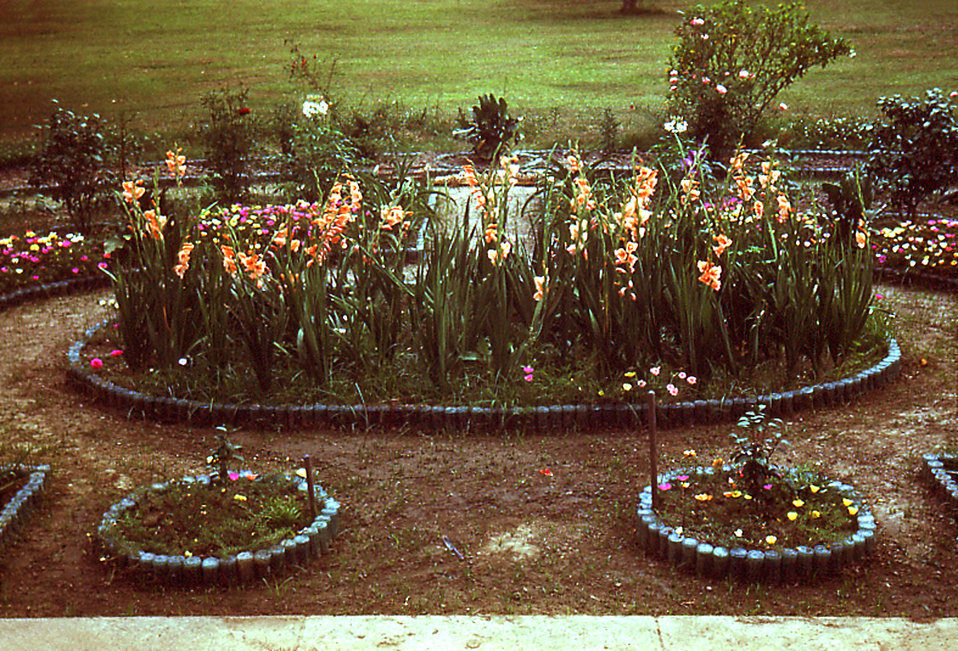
Grown by a Carville, Louisiana Leprosarium patient, this quaint garden was constructed from used Coca-Cola bottles that had been discarded by the hospital's canteen. Other gardens on the premises were based on other types of creative designs. There were many wonderful flower gardens, hosting plants of all kinds. Some of the patients had magical green thumbs, to which these magnificent roses surely attest. Being that the patients were for the most part quarantined, and therefore, sequestered from the surrounding society, participation in outdoor activities such as gardening, were appreciated by many patients.